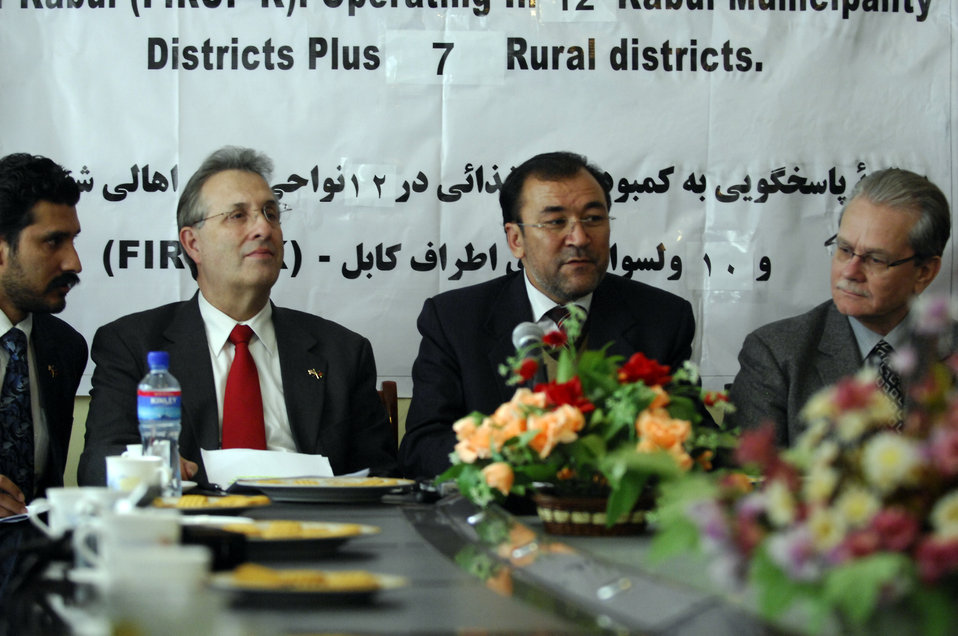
Care86 (1)